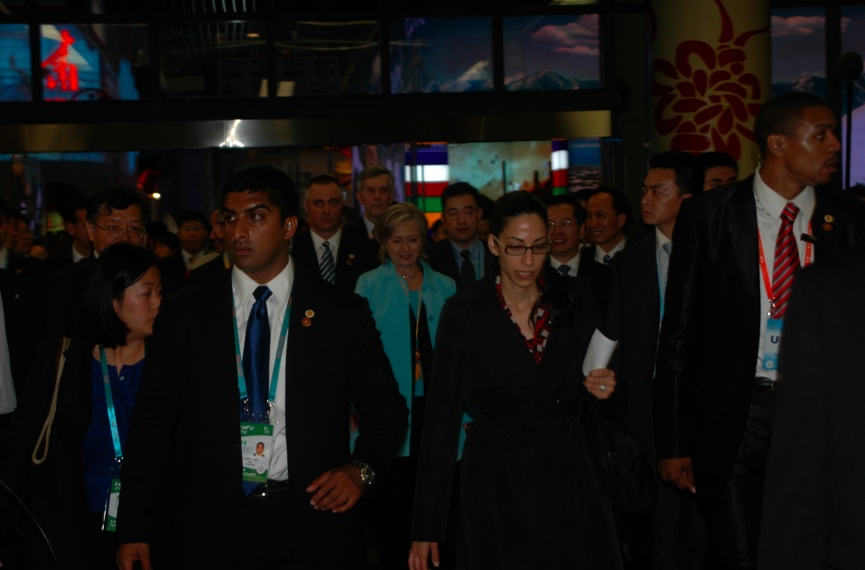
Secretary Clinton Participates in the 2010 World Expo

U.S. Secretary of State Hillary Rodham Clinton participates in the 2010 World Expo in Shanghai, China, May 22, 2010.